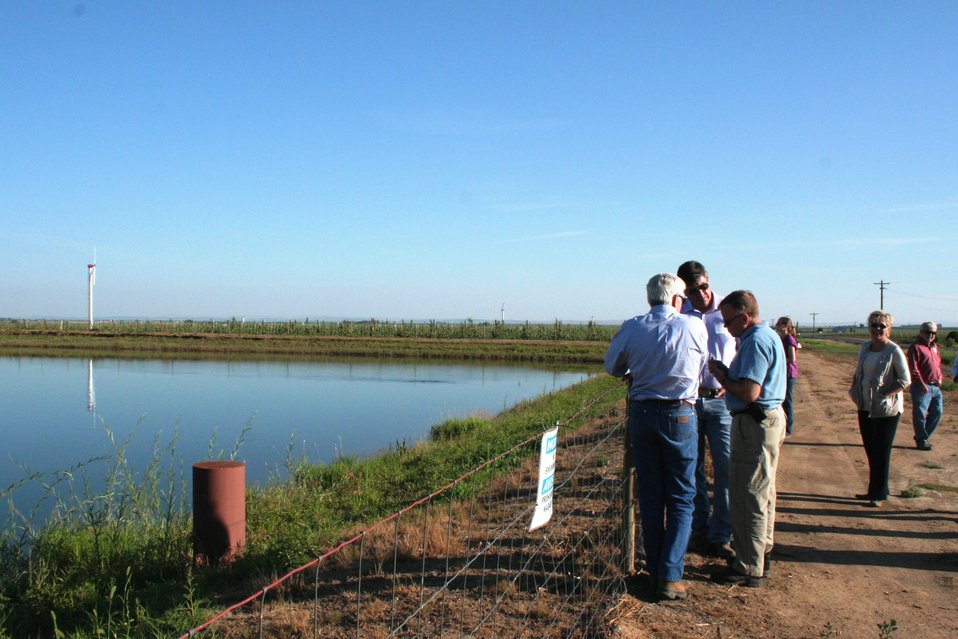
On the Road with Mike Taylor

FDA Deputy Commissioner Michael Taylor (left) and colleagues started a five-day tour of the Pacific Northwest on Sunday, Aug. 11, 2013 -- visiting Idaho, Oregon and Washington -- to get a first-hand look at produce production and irrigation operations, and to discuss the proposed Produce Safety Rule with growers, food industry representatives and state officials. Here Mike and colleagues are touring an irrigation canal. For more about Mike's multi-region tour, read these FDA Voice blog posts:

• Hearing the Concerns of Maine Growers Striving for Agricultural Diversity
• On the Road with Mike Taylor: Touring the Pacific Northwest
• On the Road with Mike Taylor, Day 2: Frank Talk in Farm Country
• On the Road with Mike Taylor, Day 3: Families and Partnerships
• On the Road with Mike Taylor, Day 4: Looking to the Future